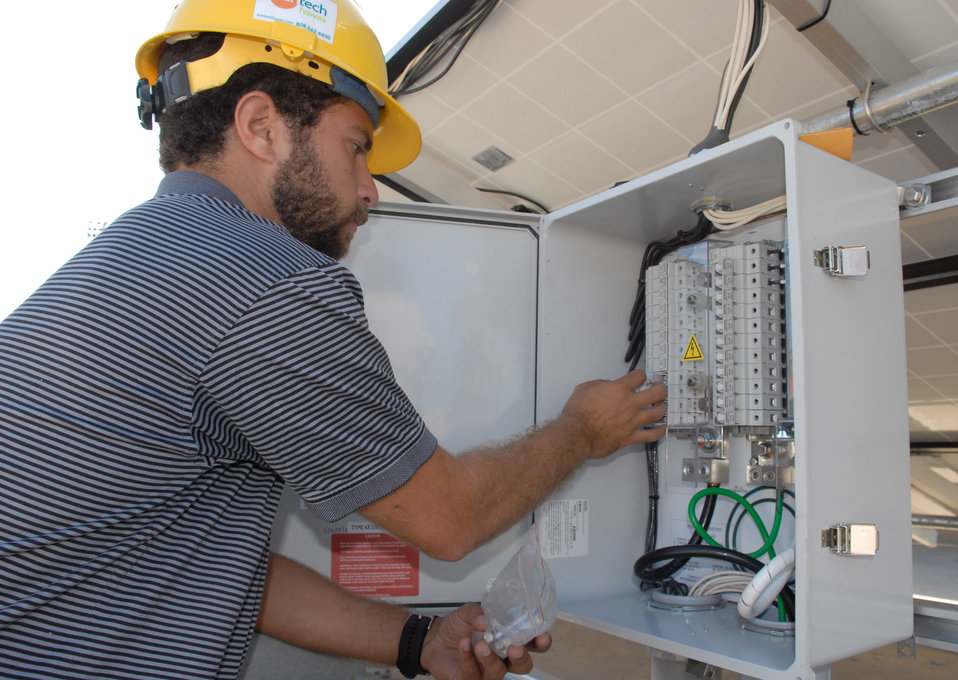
Air Force solar-powered hydrogen plant completed

Nolie Diakoulas installs fuses in the combiner box behind the solar panels May 13 at Hickam Air Force Base, Hawaii. When the sun hits the photovoltaic panels, electrons move from front to back, creating a current that travels through small wires to a junction box in the back. The junction box takes the current from the small wires and moves it to larger wires, which travel to a combiner box. There, DC power is converted to AC (usable) power, which runs the base hydrogen station. Mr. Diakoulas is a civilian contractor on the project.